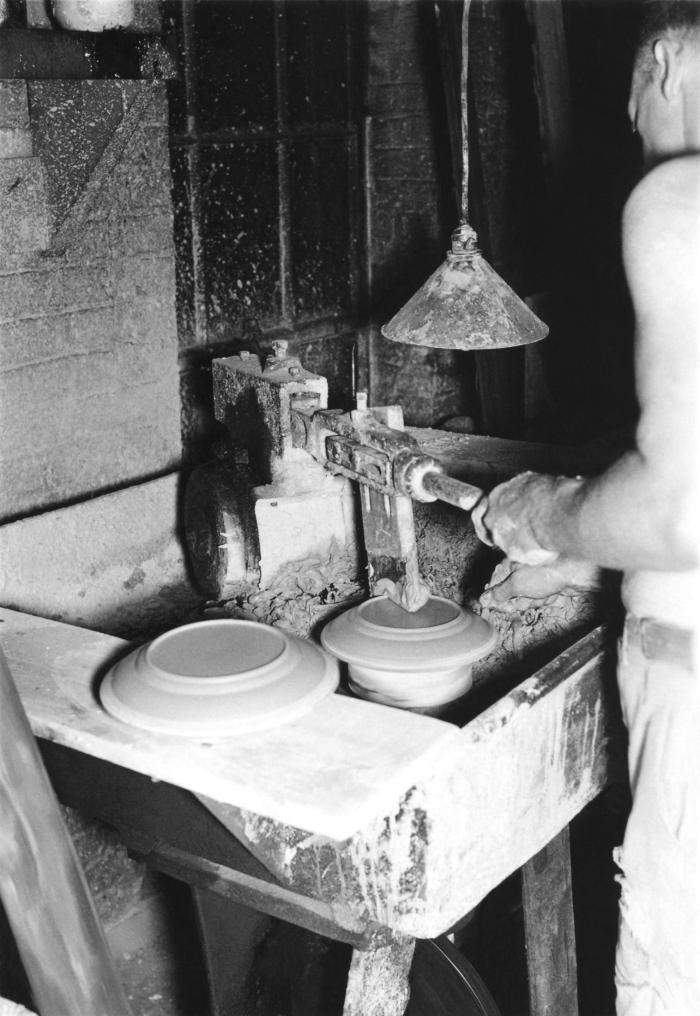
Provided by the Center for Disease Control's (CDC), National Institute for Occupational Safety and Health (NIOSH), this historic image depicted a male industrial worker who was inside a West Virginia ceramics factory, seen here as he was trimming what looked to be greenware dishes, using a motorized rotating lathe. Greenware is newly formed clay pieces that have not been fired to what is termed a 'bisque' state. Working within a clay-processing environment, workers should have taken precautions against the possibility of inhaling airborne particulates, which would lead to the chronic pulmonary disease known as pneumoconiosis, or silicosis, or more commonly known as 'grinders' disease', characterized by the formation of nodular fibrotic changes in the lungs. Note that this man was not wearing a filtered breathing mask, thereby, increasing his chances of contracting silicosis. The image was published in the 'Public Health Bulletin', No. 244, 1939.